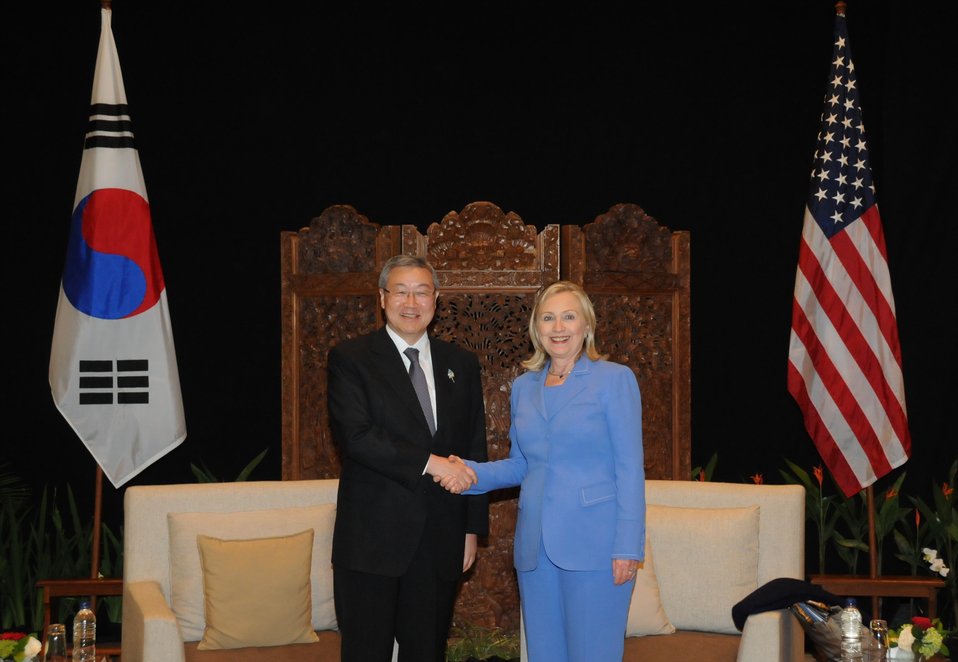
Secretary Clinton Meets With South Korean Foreign Minister Kim Sung-Hwan

U.S. Secretary of State Hillary Clinton, right, meets with Foreign Minister of the Republic of Korea (ROK) Kim Sung-Hwan, left, for a bilateral meeting in Bali, Indonesia, on July 23, 2011.